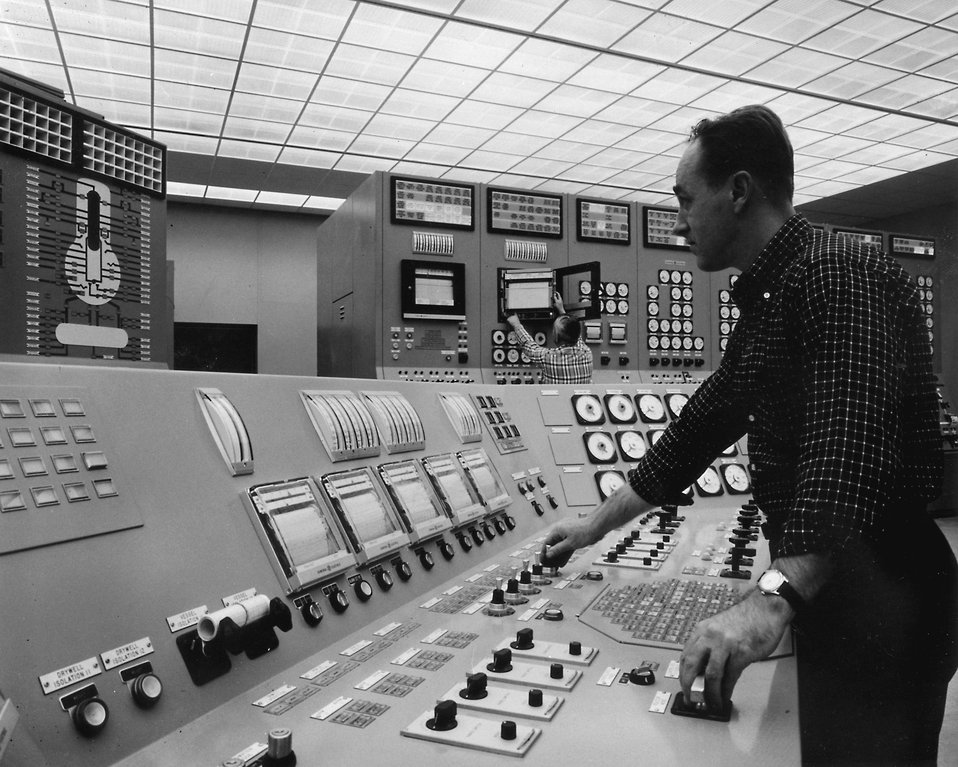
Humans and computers work together to operate the control room of the Nine Mile Point Nuclear Station. The control room serves as the nerve center for the 500,000 kilowatt boiling water reactor plant, assuring safe and dependable operation. Circa 1971.